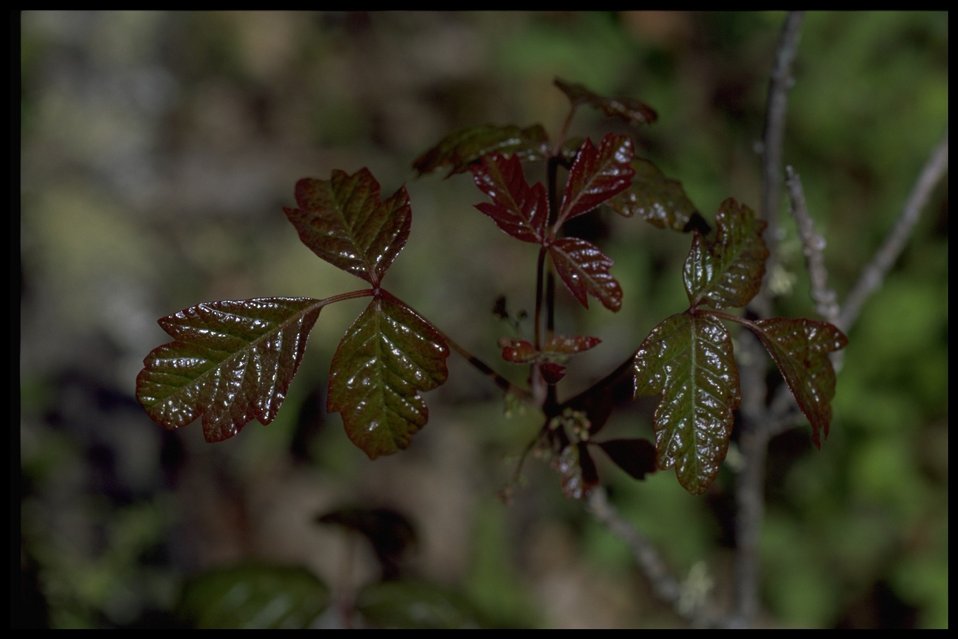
Medium shot of Toxicodendron diversilobum.